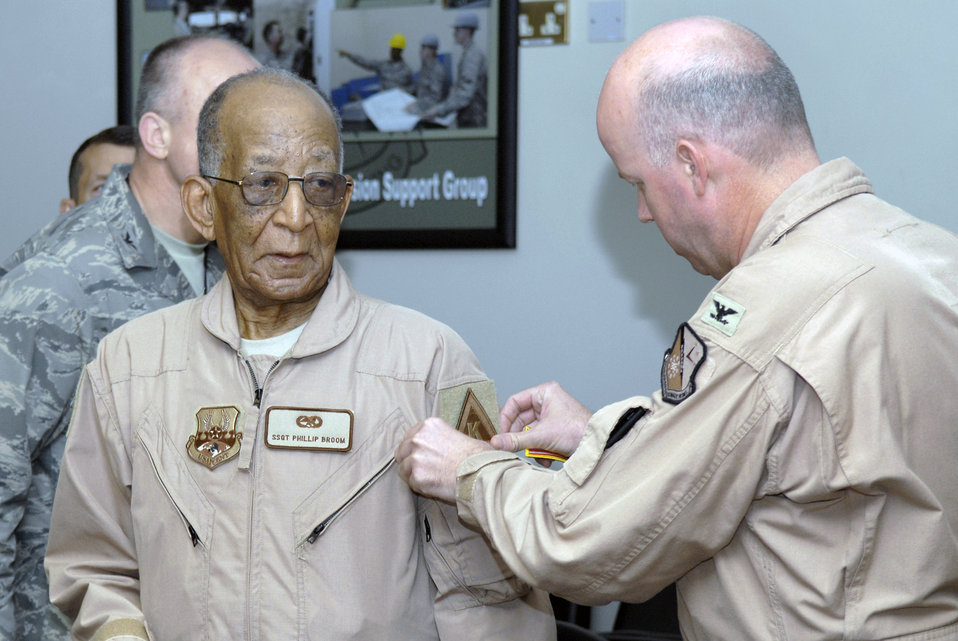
Tuskegee Airmen visit Southwest Asia

Col. Paul Guemmer, vice commander of the 379th Air Expeditionary Wing, places a wing